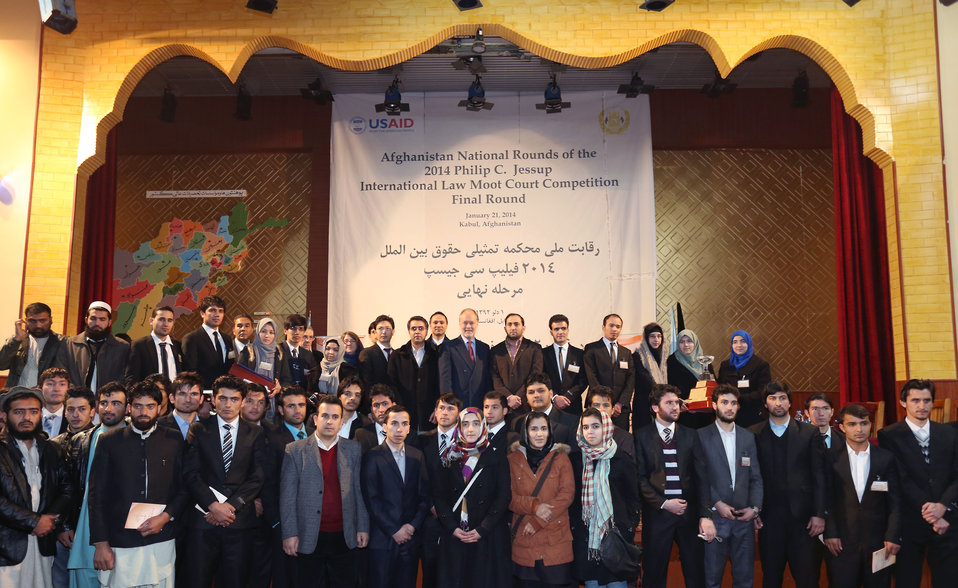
International Law Moot Court Competition 2014